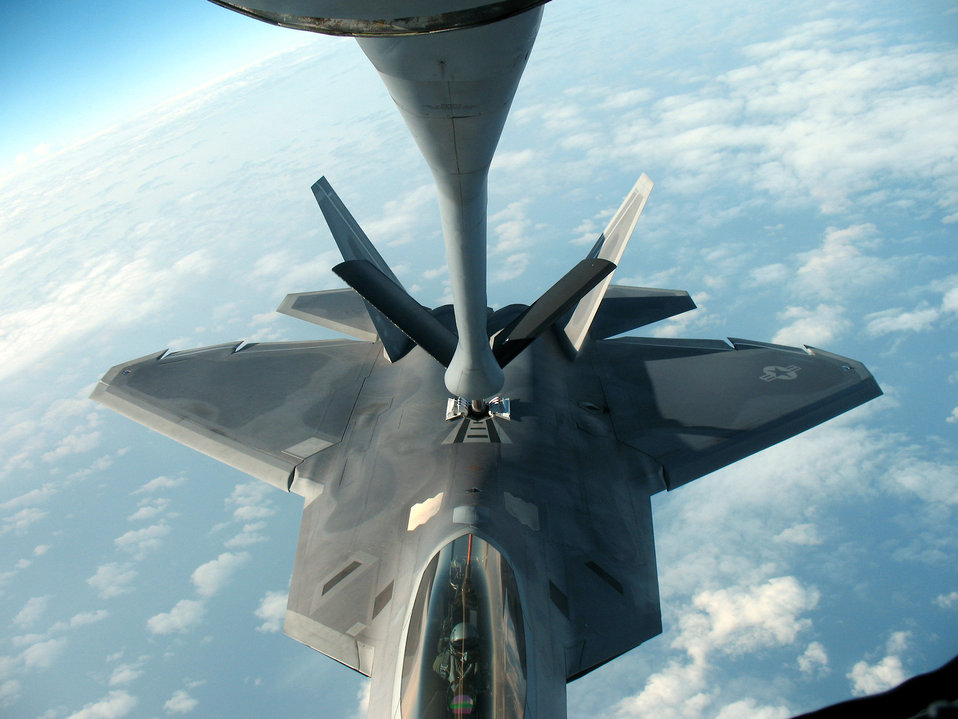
Stratotankers key players in fighting war on terrorism

A KC-135 Stratotanker refuels an F-22 Rapter over the Pacific.